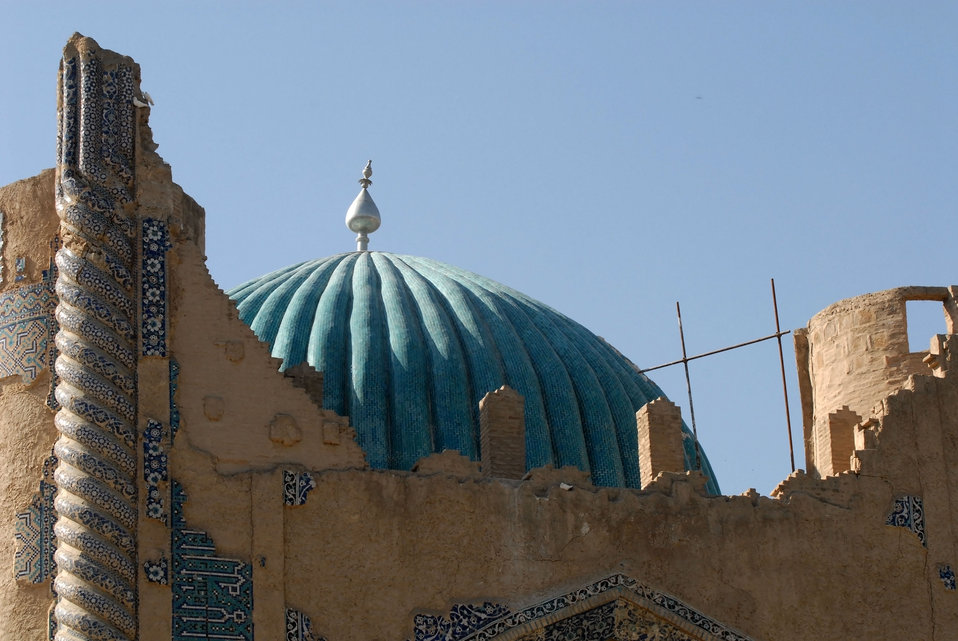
'On the Road' in Balkh Province